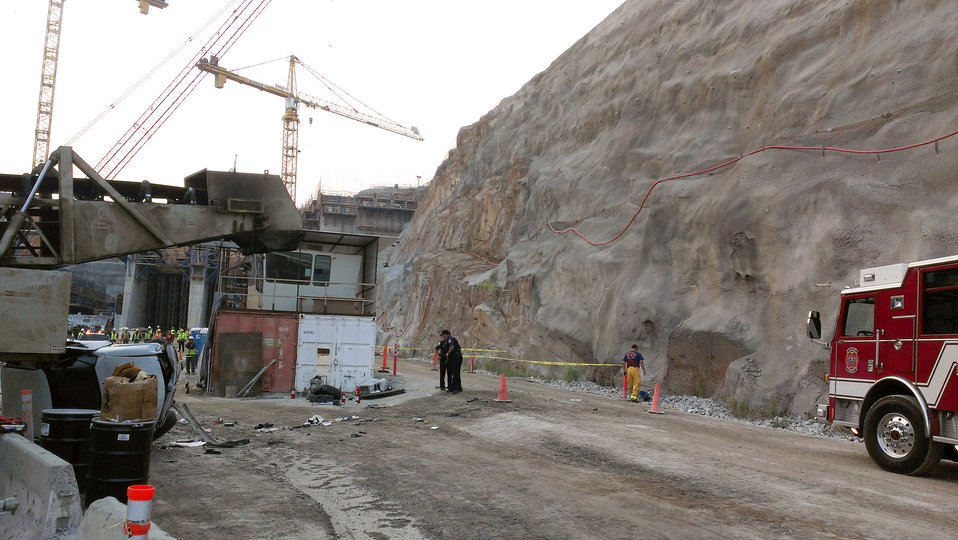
Vehicle plunges into Folsom Dam spillway construction site

Emergency personnel respond to the scene after a vehicle, shown at left, plunged more than 100 feet into the Folsom Dam auxiliary spillway project construction site in Folsom, Calif., July 30, 2013. Employees of the project contractor, Granite Construction Inc., were the first to respond to the incident and safely extracted the driver from the vehicle. An electrical cable supplying power to the project was the only damage to the construction site. Work is expected to resume during the evening of July 30.